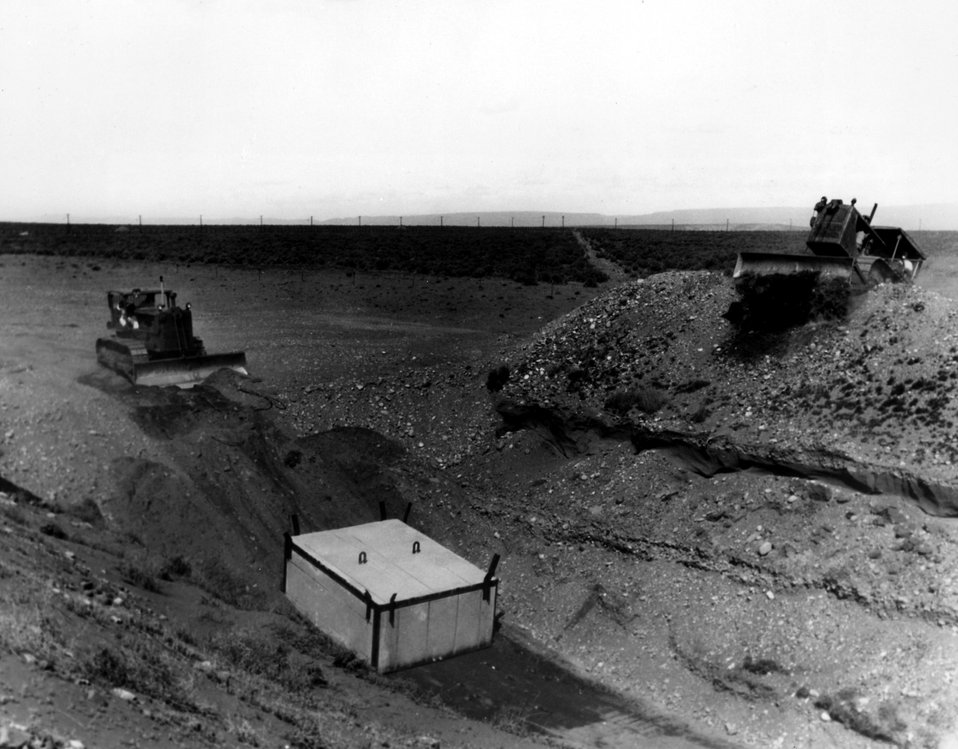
Concrete burial boxes weighing up to 30 tons are used to bury highly radioactive process equipment which cannot be decontaminated to low level at the
Energy Research and Development Administration's Hanford Works.